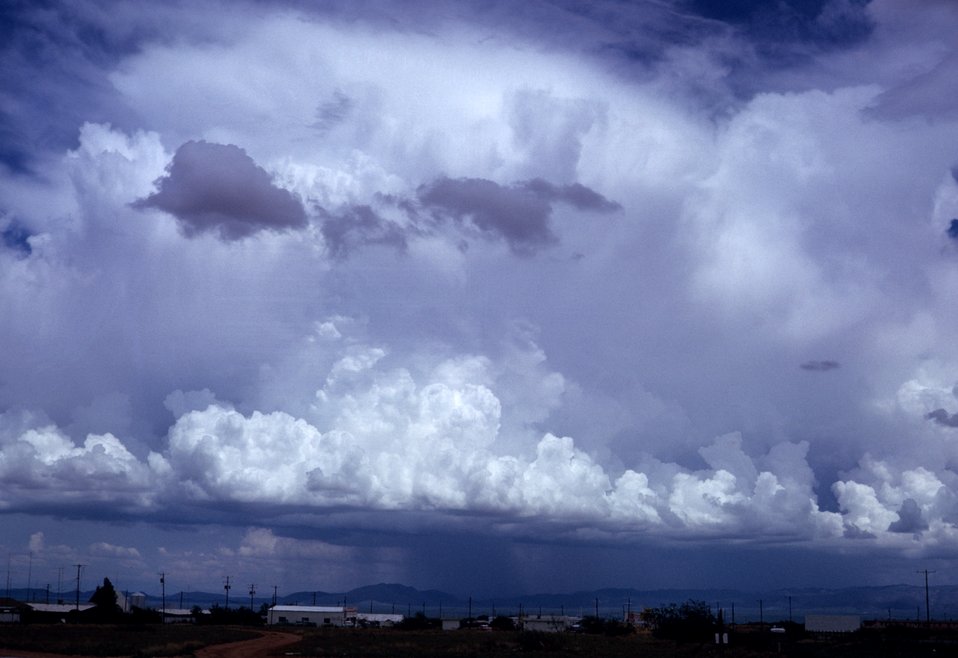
Large thunderstorm over the desert.